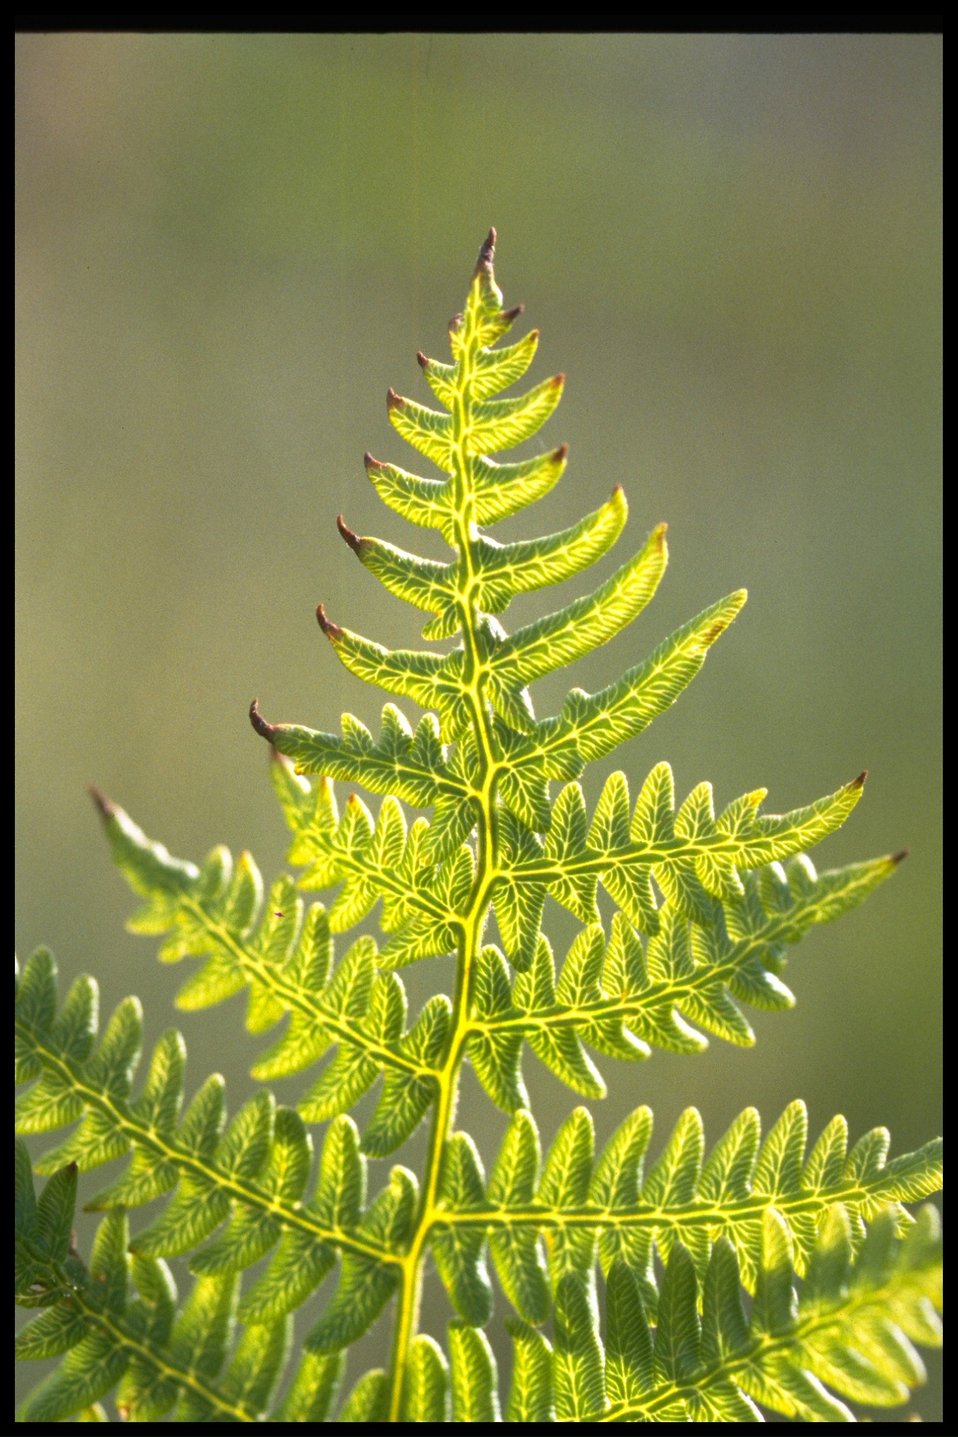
A fern at Point Colville.